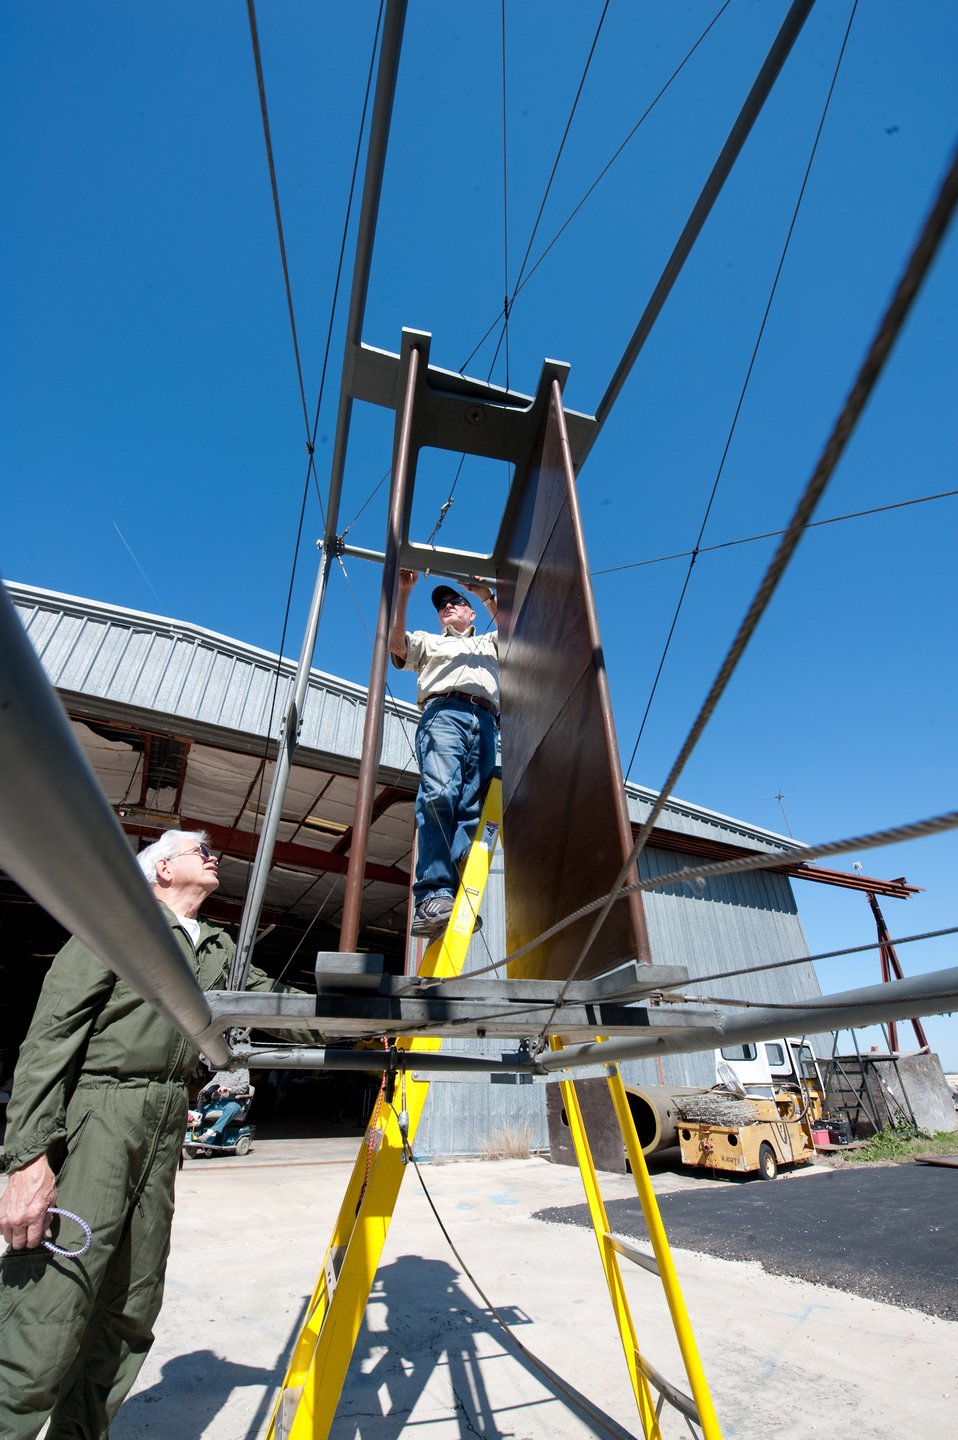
Wright

Rich Stepler (on ladder), pilot of the Wright